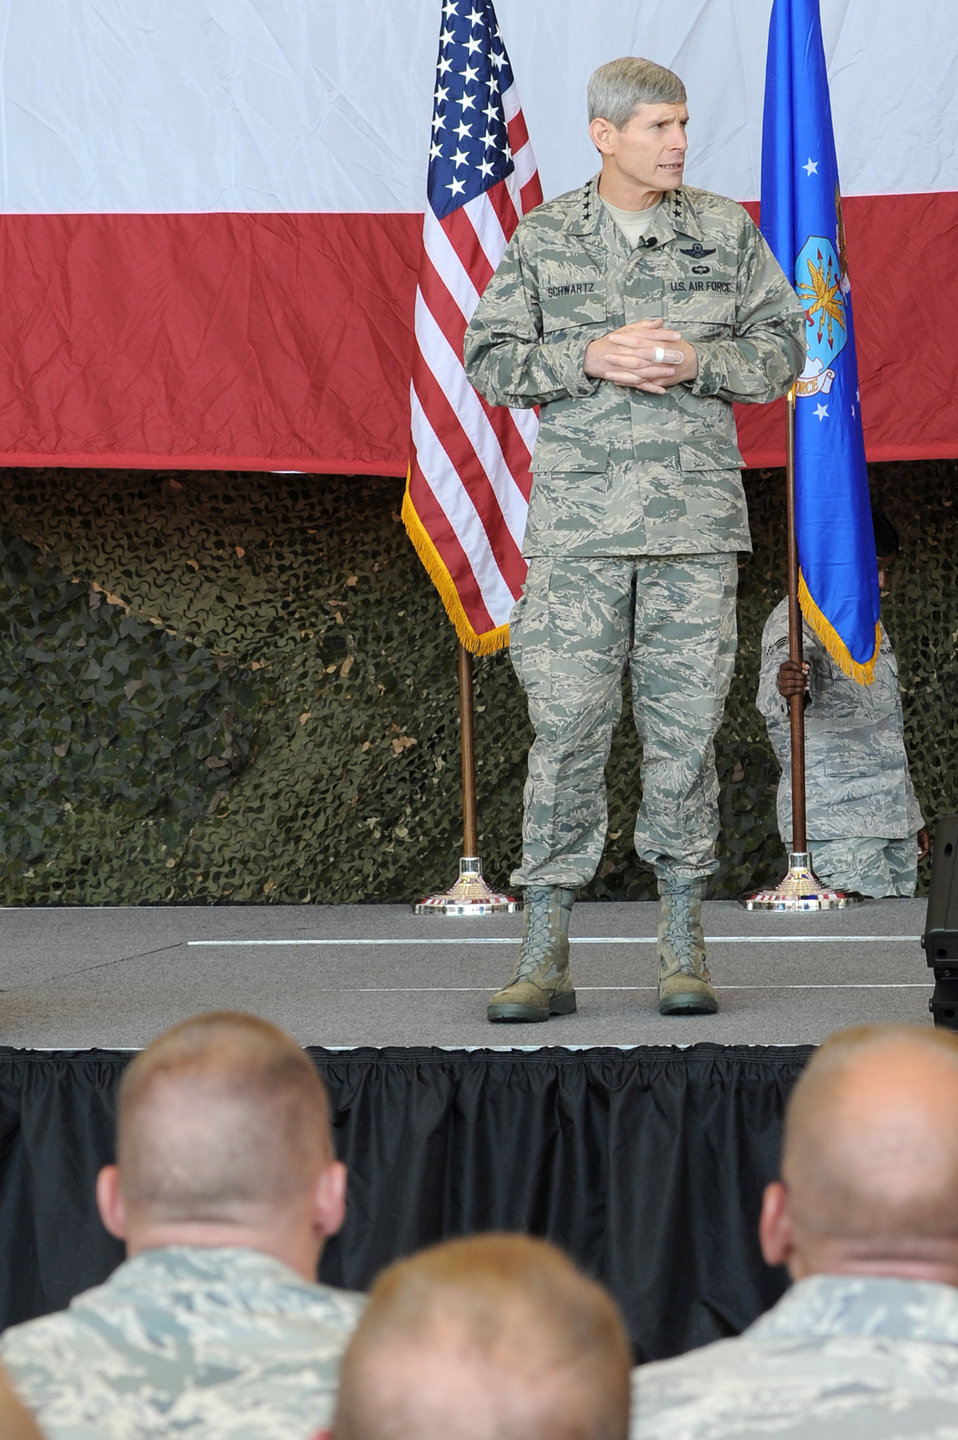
CSAF addresses AF issues, surveys tornado damage at Little Rock AFB

Air Force Chief of Staff Gen. Norton Schwartz answers questions from Airmen May 4, 2011, during an all call at Little Rock Air Force Base, Ark. General Schwartz answered questions regarding a variety of topics, including the current Air Force operations tempo and future deployment outlook.